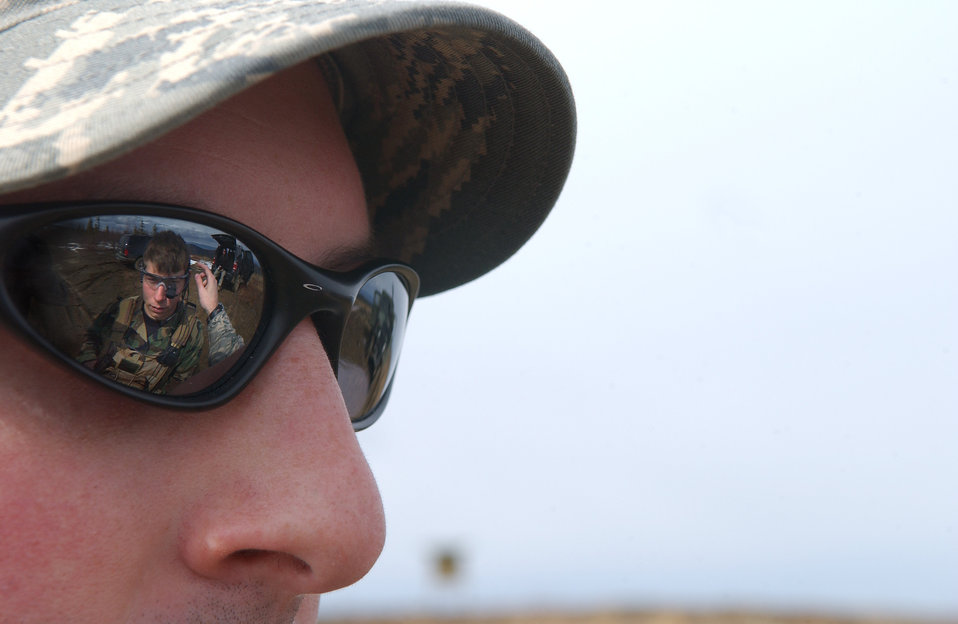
New experimental equipment enhances Airmen capabilities

Gregory Burnett observes Senior Airman Nicholas Halladay use new communication equipment during Exercise Northern Edge May 5 at Eielson Air Force Base, Alaska. Tactical Air Control Party Airmen are helping test the new experimental equipment in the field. Airman Halladay is a TACP assigned to Det. 1, 3rd Air Support Operation Squadron from Fort Richardson, Alaska. Mr. Burnett is a chief engineer with Air Force Research Labs from Wright-Patterson AFB, Ohio.